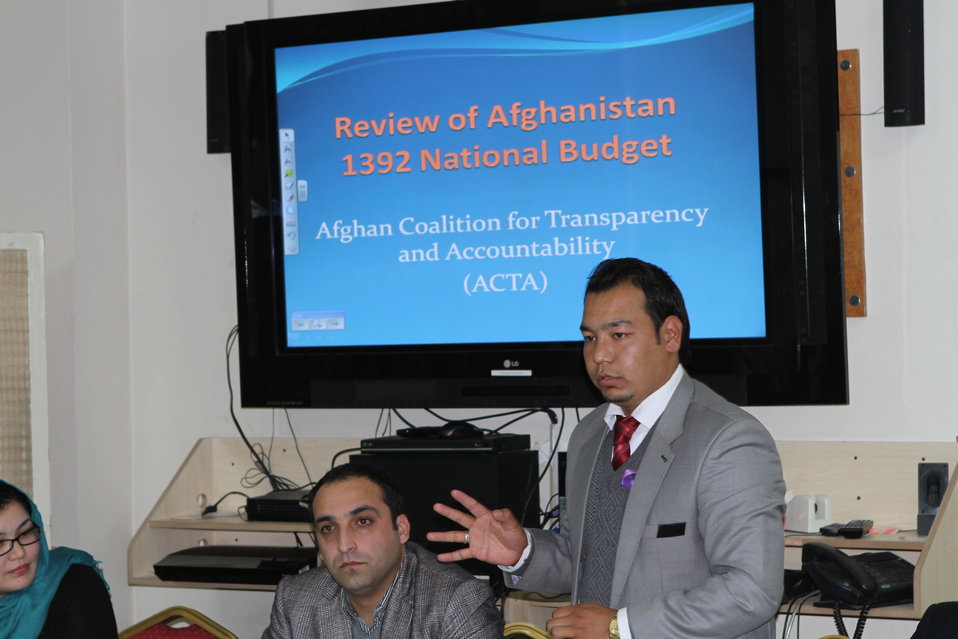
Presentation of the ACTA Civil Society analysis of the FY 1392 Afghan national budget